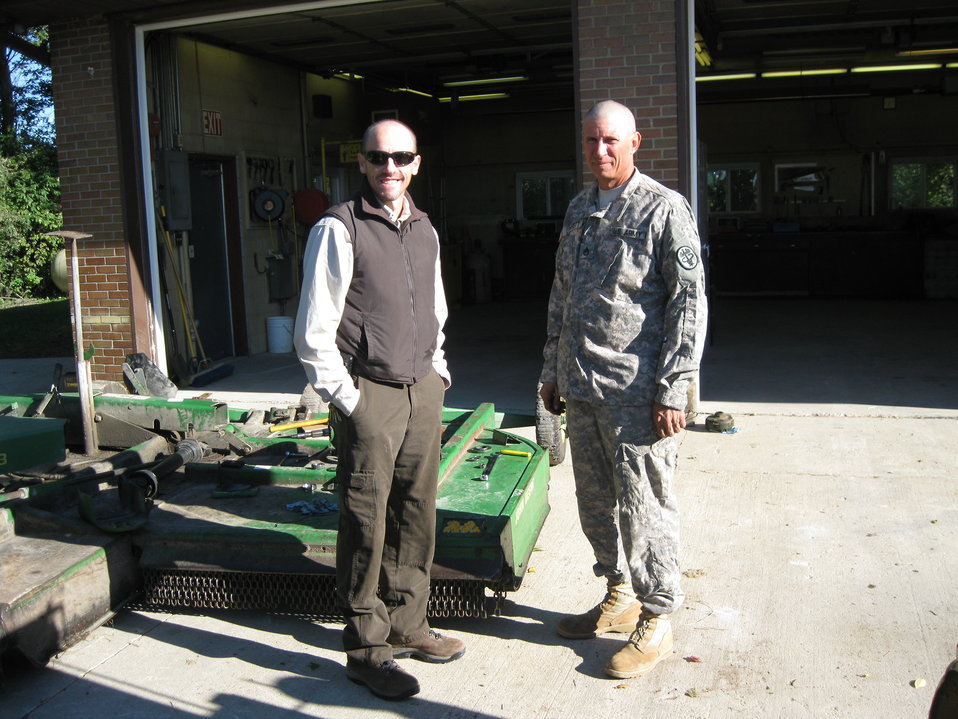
Working Together

Refuge manager Jason Lewis with Warrior in Transition Volunteer Jeff Barrett standing near a mower he is repairing.